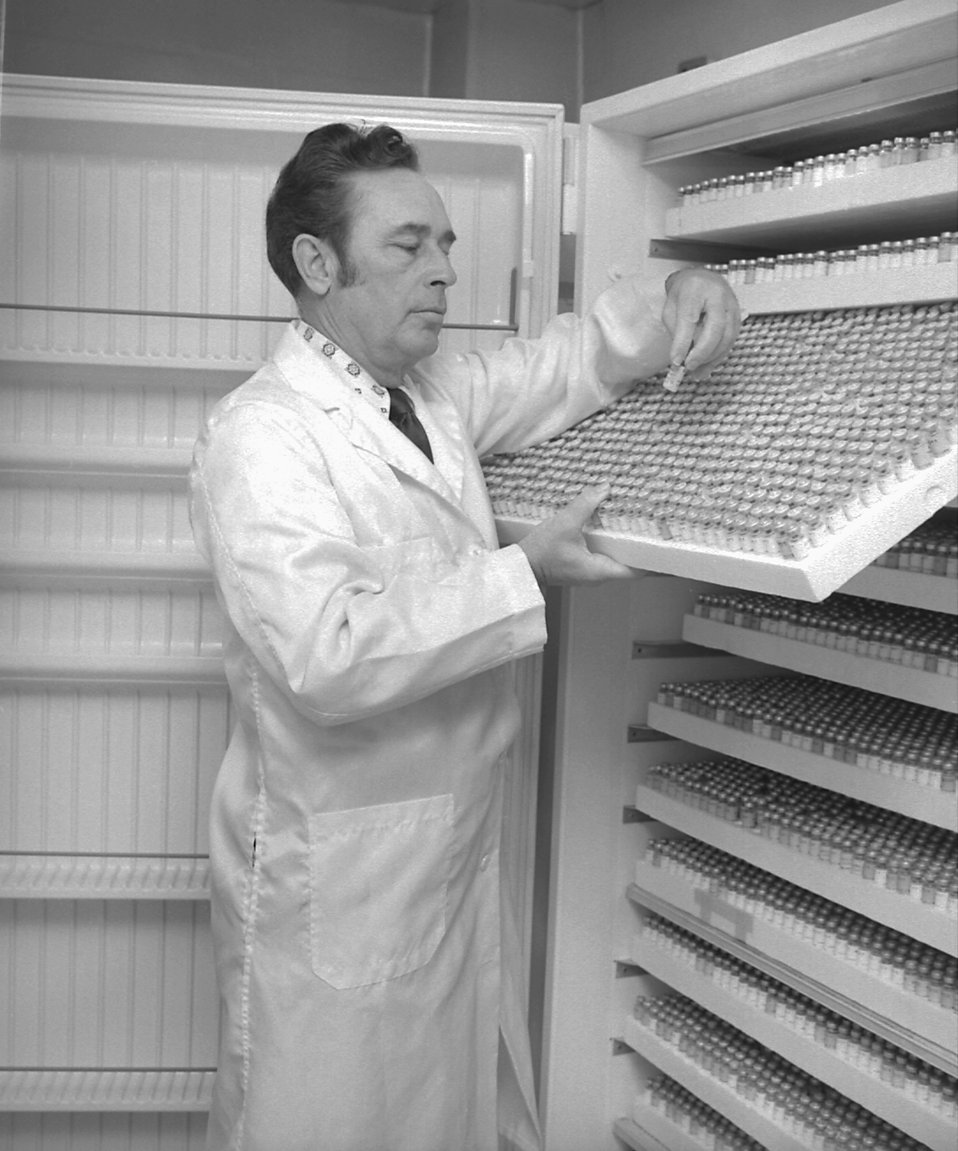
Lab technician Chuck Peters examines the labels on stored serum vials, 1977.